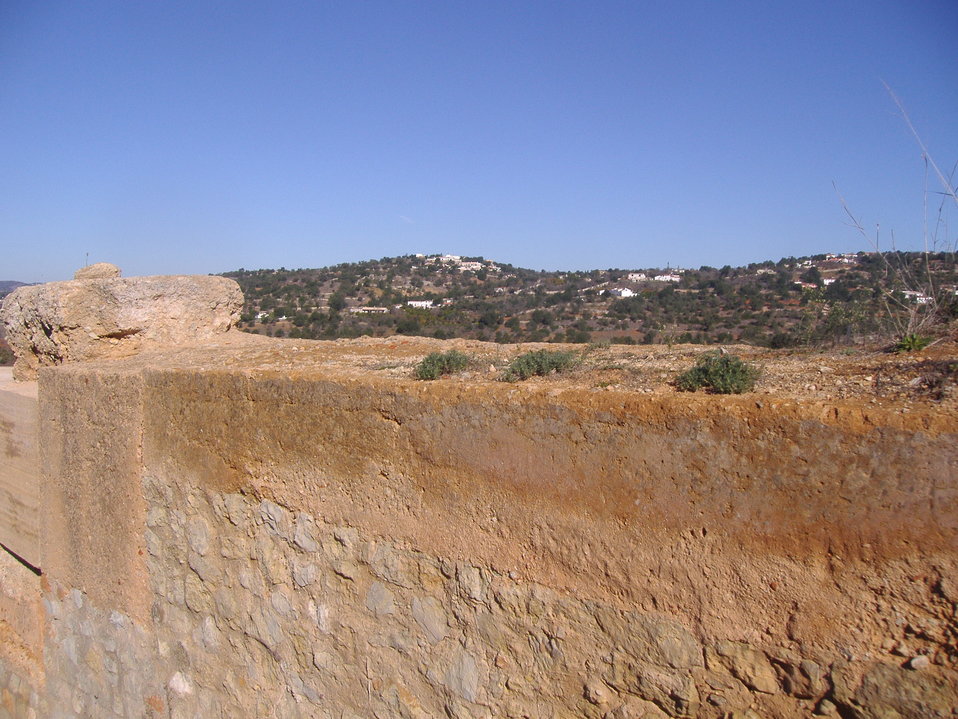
Paderne Castle Portugal Nov 2007 by Beechgrove - South wall